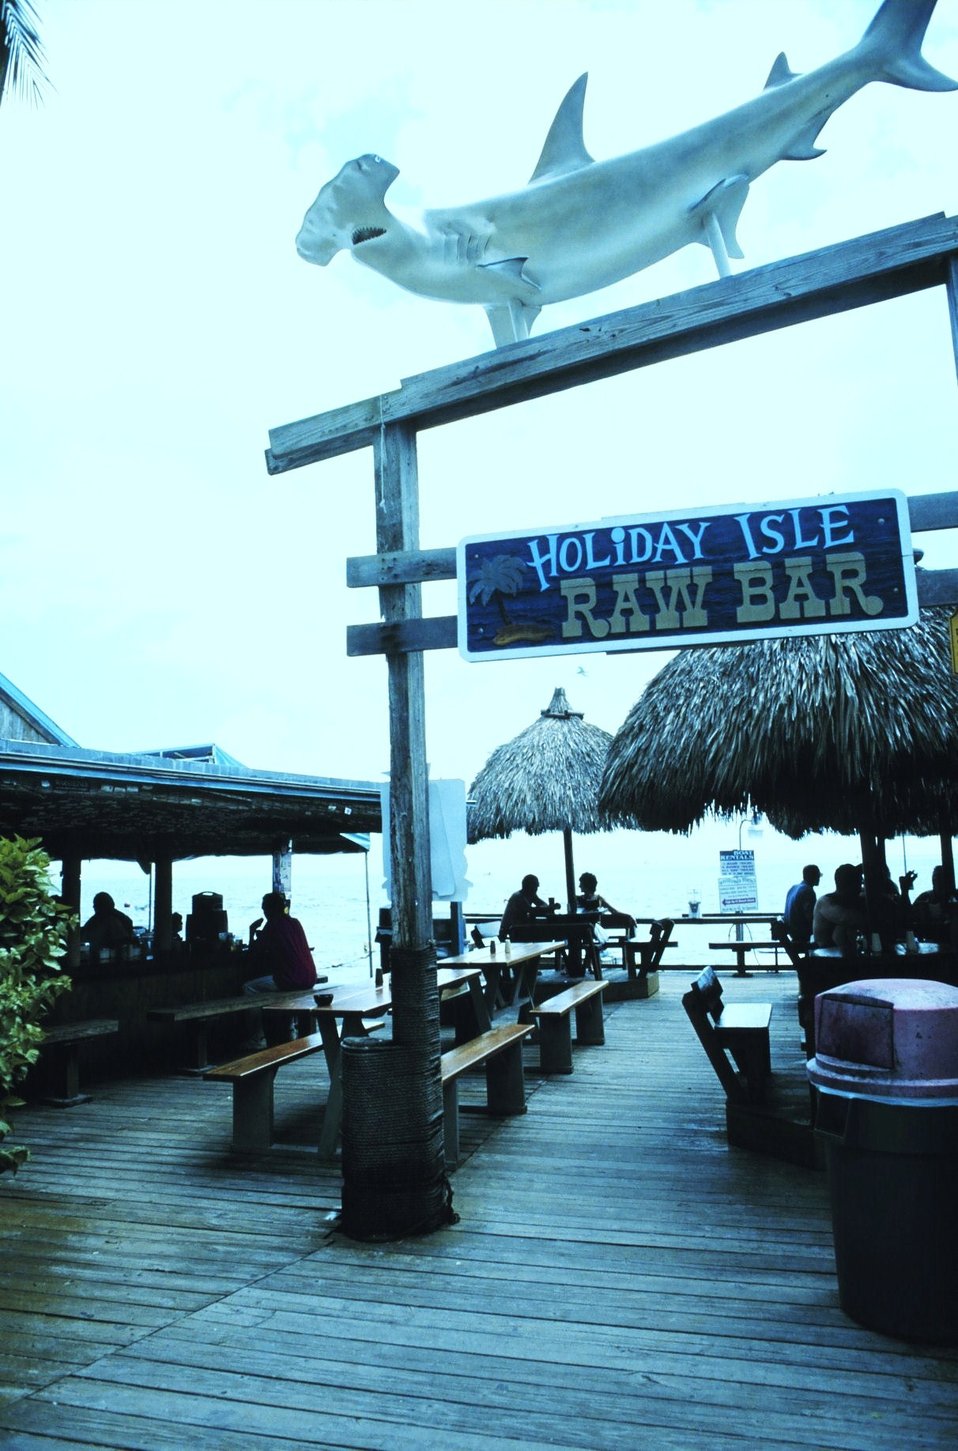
Fish art